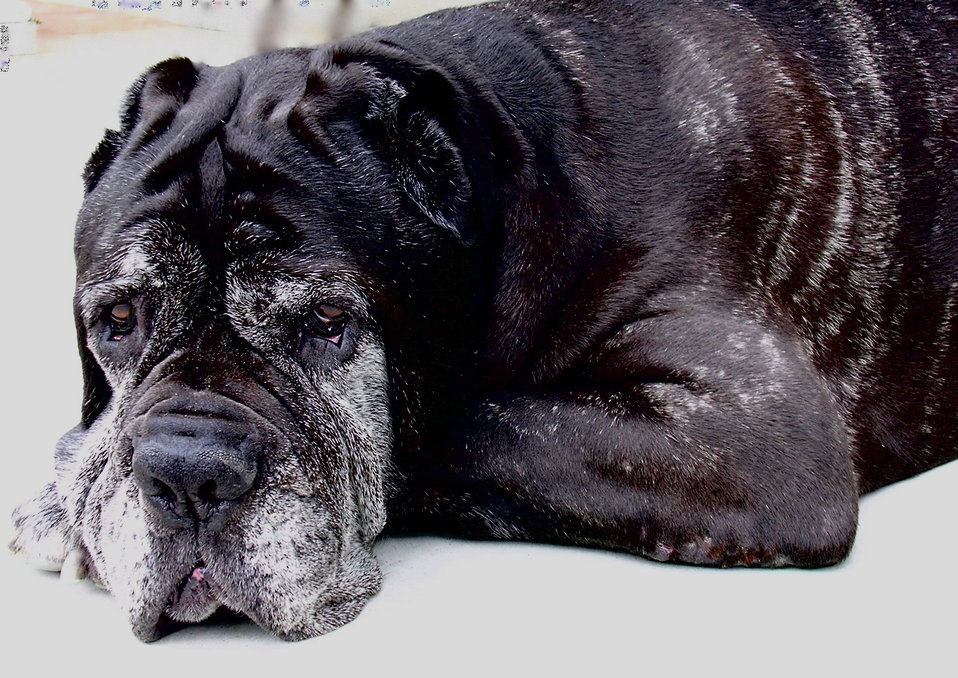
Description: Photo taken by Lisa M. Herndon Source: Digital 4 megapixel file Date: 2005 Author: Lisa M. Herndon